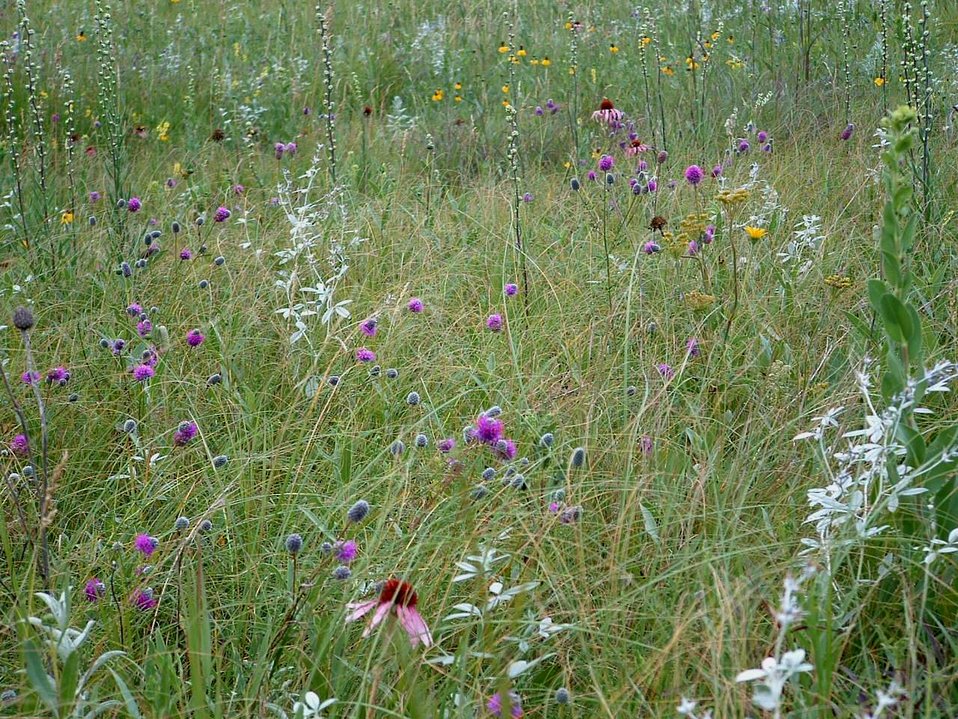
Prairie Diversity

Native prairie is made up of hundreds of species of flowers and grasses, each season will bring a different mix. This photo was taken in summer when purple prairie clover, purple coneflowers, and prairie coneflowers are blooming. Taken at N. Lamee WPA.